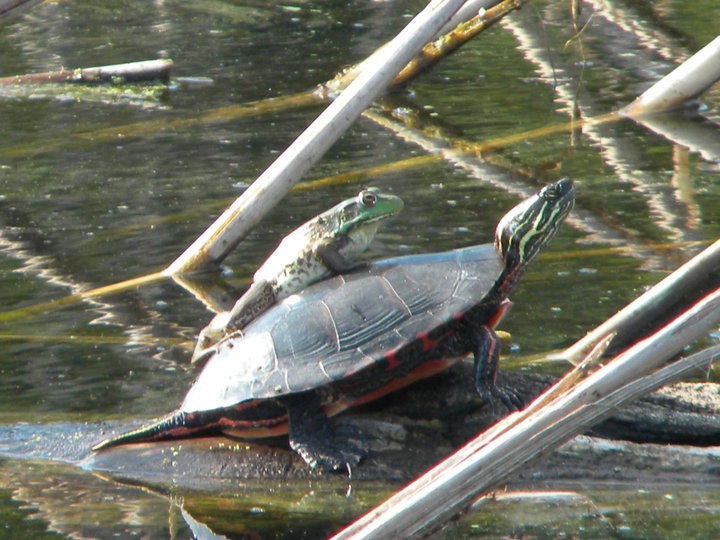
turtle & frog

Horicon National Wildlife Refuge, WI